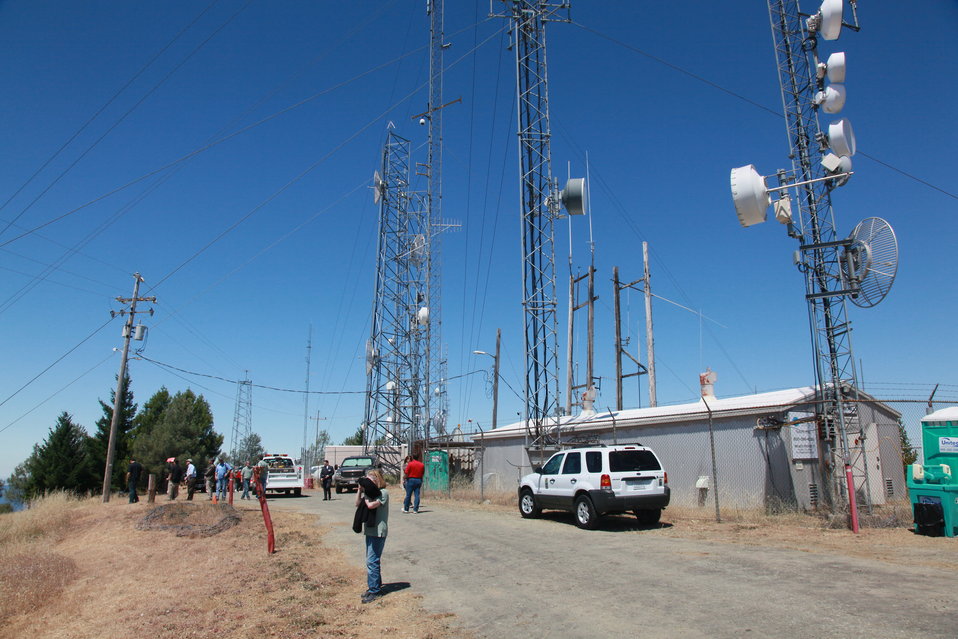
SACRAMENTO,Calif. (July 9,2010)-- The old and the new technology atop of Mount Umunhum.